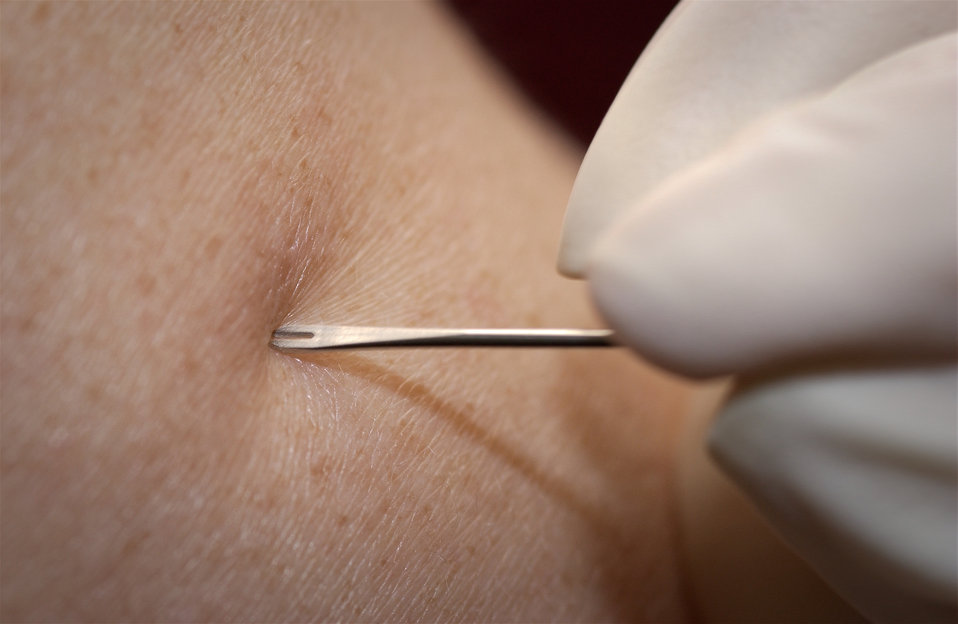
CDC Clinician demonstrates the use of a bifurcated needle during the 2002 Smallpox Vaccinator Workshop.